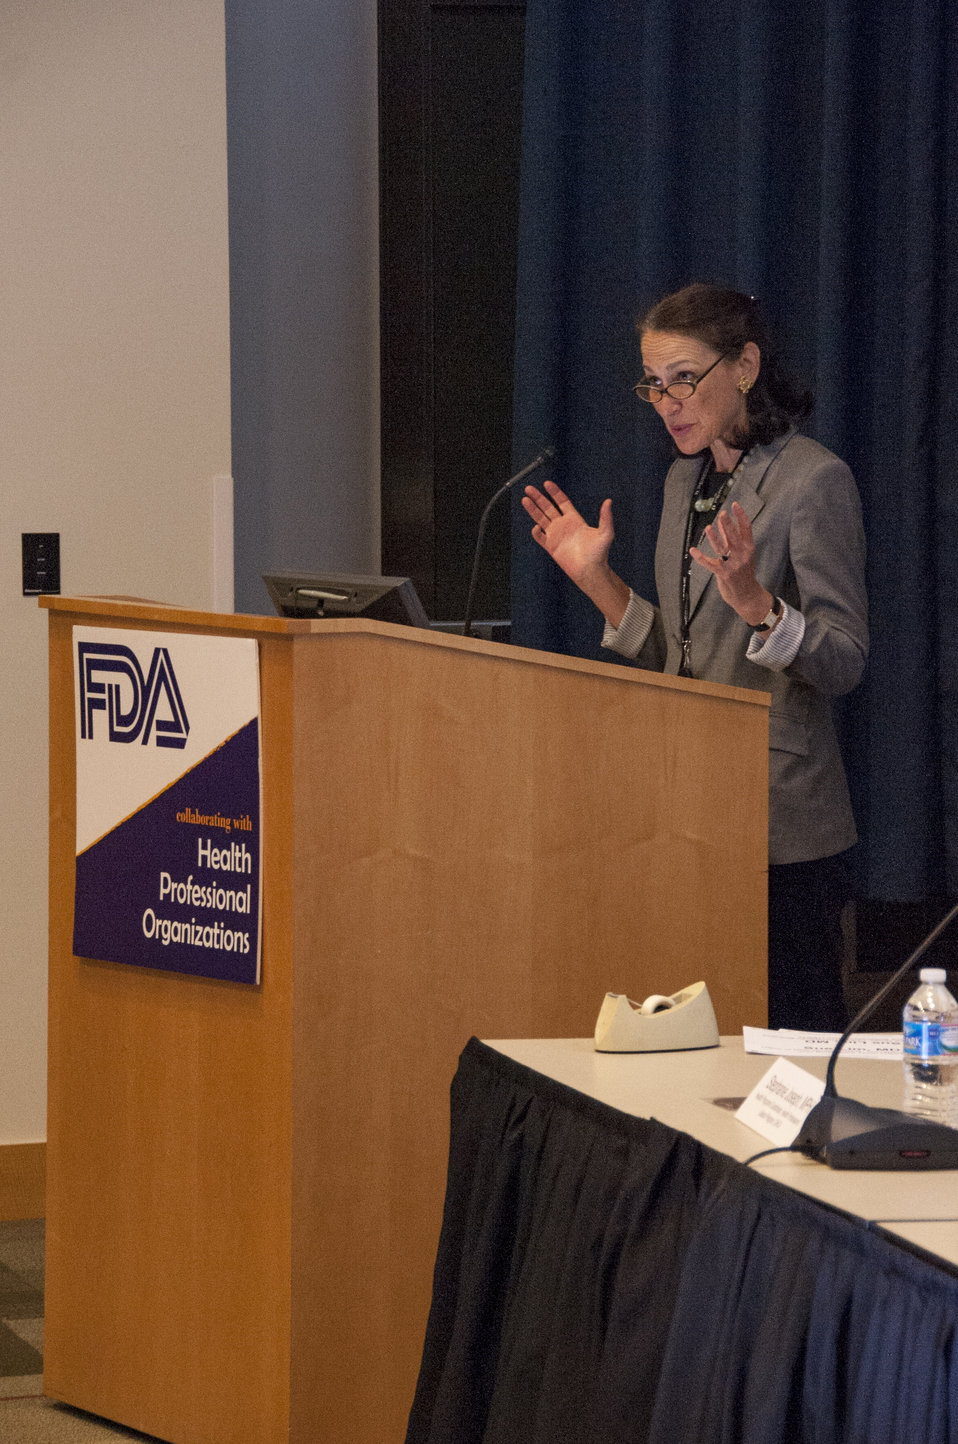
FDA's 2014 Health Professional Organizations Conference (1034)

May 14, 2014; Commissioner Margaret A. Hamburg made the introductory remarks at FDA's third annual Health Professional Organizations Conference, where some of the agency’s most senior leaders exchanged views and discussed issues of mutual interest with senior representatives from key health professional organizations. To learn more, go to FDA Voice.

This photo is free of all copyright restrictions and available for use and redistribution without permission. Credit to the U.S. Food and Drug Administration is appreciated but not required.

Privacy and use information: www.flickr.com/people/fdaphotos/